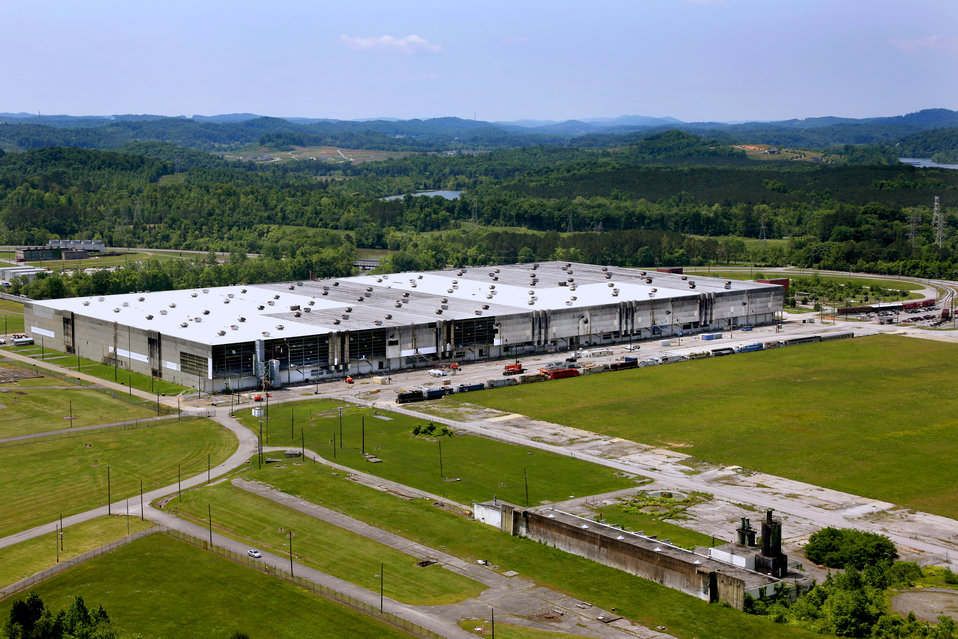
K-31 DandD work aerial 2014 Oak Ridge

JRO 0071 ORNL photo Jason Richards 5-20-2014 Oak Ride Tennessee